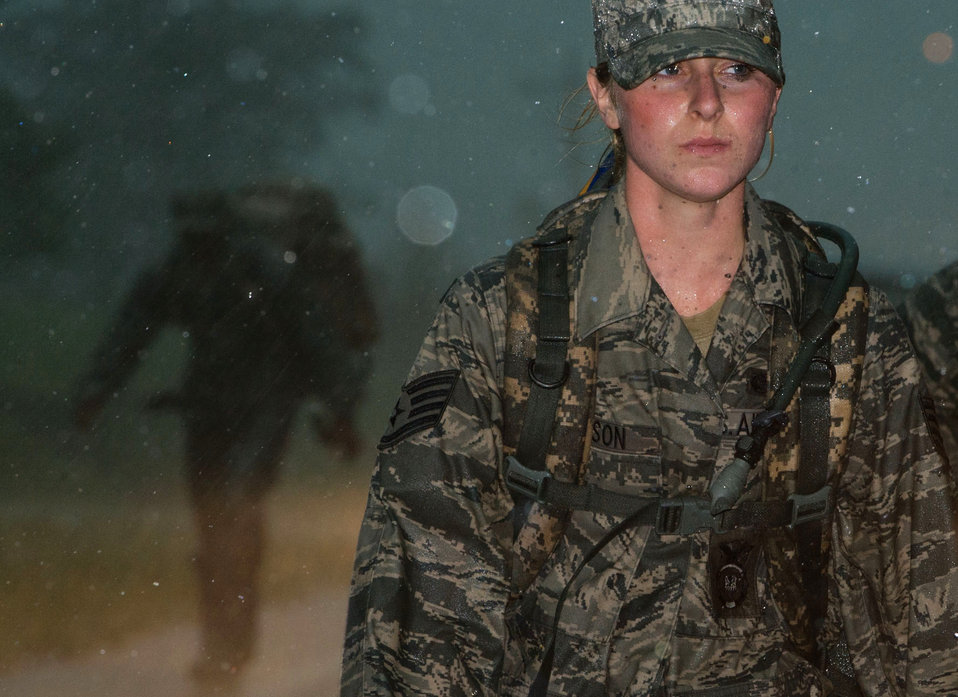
Marching on

Staff Sgt. Deanna Dickson, a 192nd Security Forces Squadron patrolman, endures wind and rain during the Security Forces 9/11 Ruck March to Remember in Greenwood, Va., Aug. 25, 2011. Security forces squadrons from multiple bases are conducting a relay ruck march from San Antonio, Texas, to Ground Zero in New York City. The 192nd SFS is part of the Virginia Air National Guard.